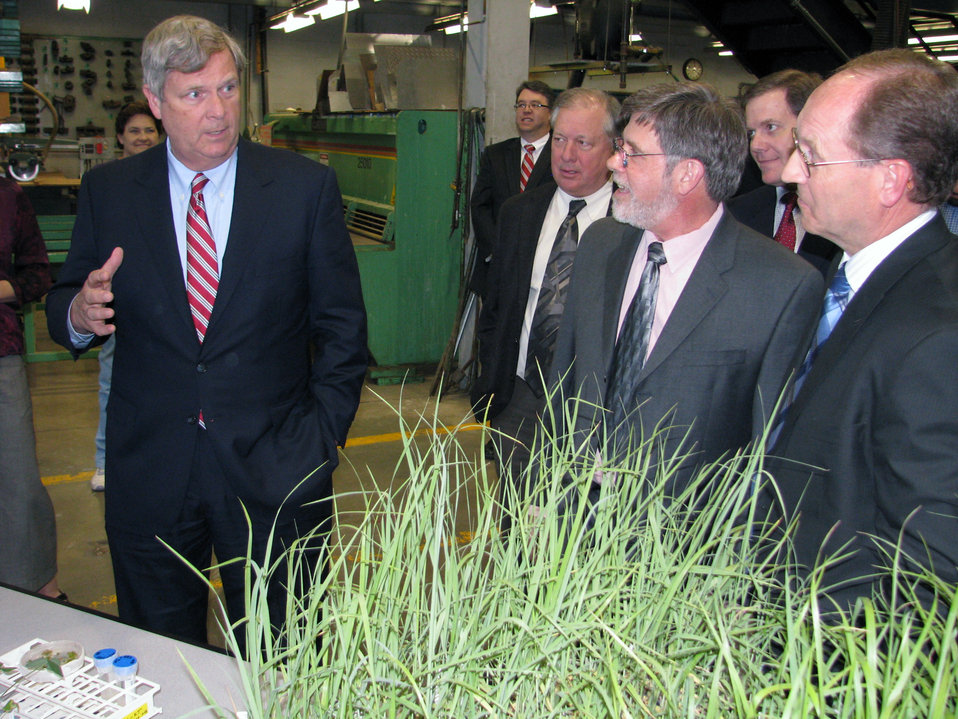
Agriculture Secretary Tom Vilsack listens to researchers discuss alfalfa at the U.S. Department of Agriculture's (USDA) Dairy Forage Research Center at the University of Wisconsin, Madison, WI, on Tuesday, May 7, 2013.